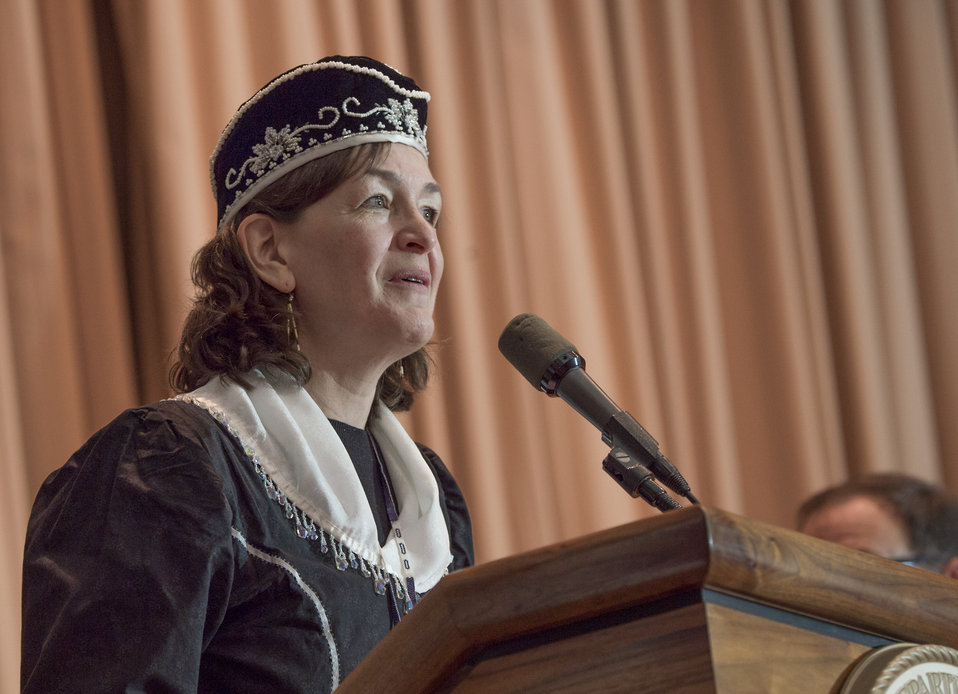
U.S. Department of Agriculture (USDA) Office of Tribal Relations (OTR) Director Onieda Nation of Wisconsin Leslie Wheelock speaks at the 2013 American Indian and Alaska Native Heritage Observance at USDA on Thursday, Nov. 14, 2013 in Washington, D.C. The theme of this year’s event was “Guiding Our Destiny with Heritage and Traditions”.